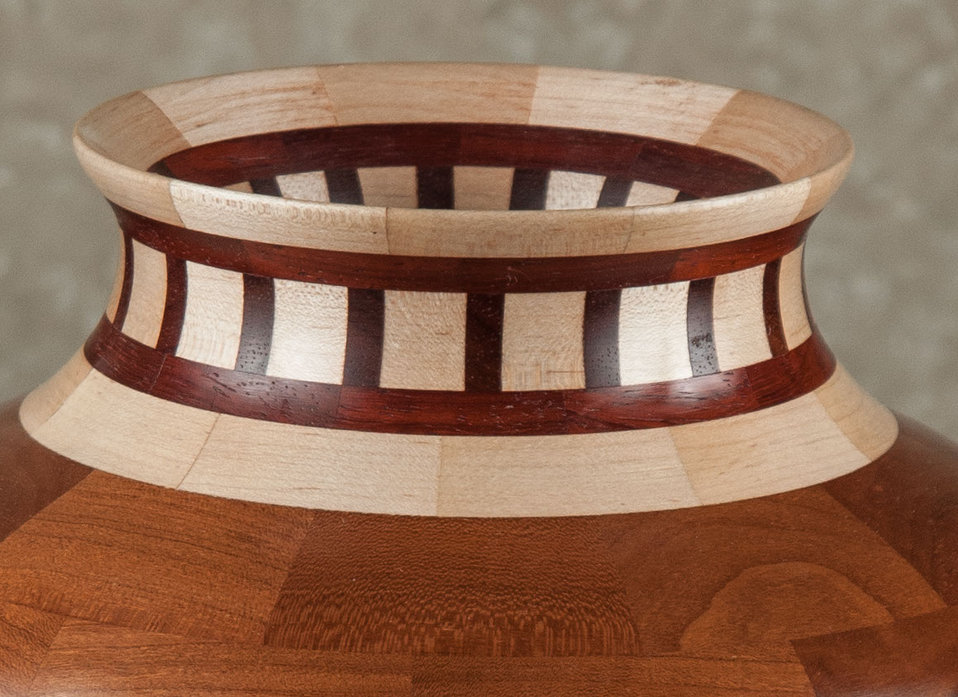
Online Viewer's Choice entries of the 2013 Art & Agriculture, Tuesday, July 9, 2013, in the South Building, Washington, D.C. Themes were expressed by employees from across the department and the contest was open to full-time and part-time USDA employees. Winning artwork will be displayed till the end of the year. U.S. Artistic expression is a creative outlet that is vital for an individual to grow and develop.